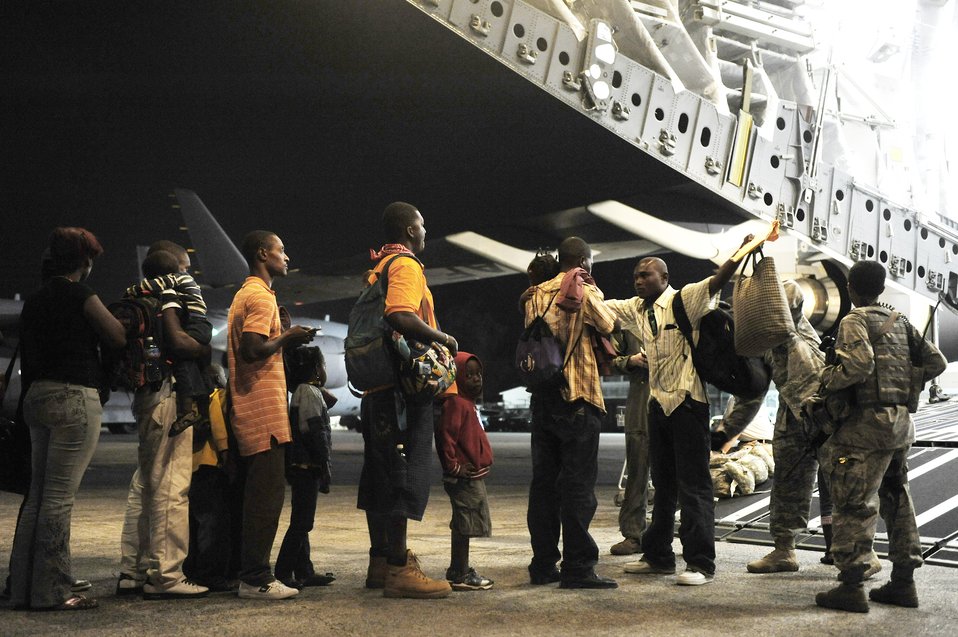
Returning

U.S. citizens in Haiti are searched with a metal detector one last time before boarding a C-17 Globemaster III for a flight back to the United States Jan. 20, 2010, at Toussaint L'Ouverture International Airport in Port-au-Prince, Haiti.